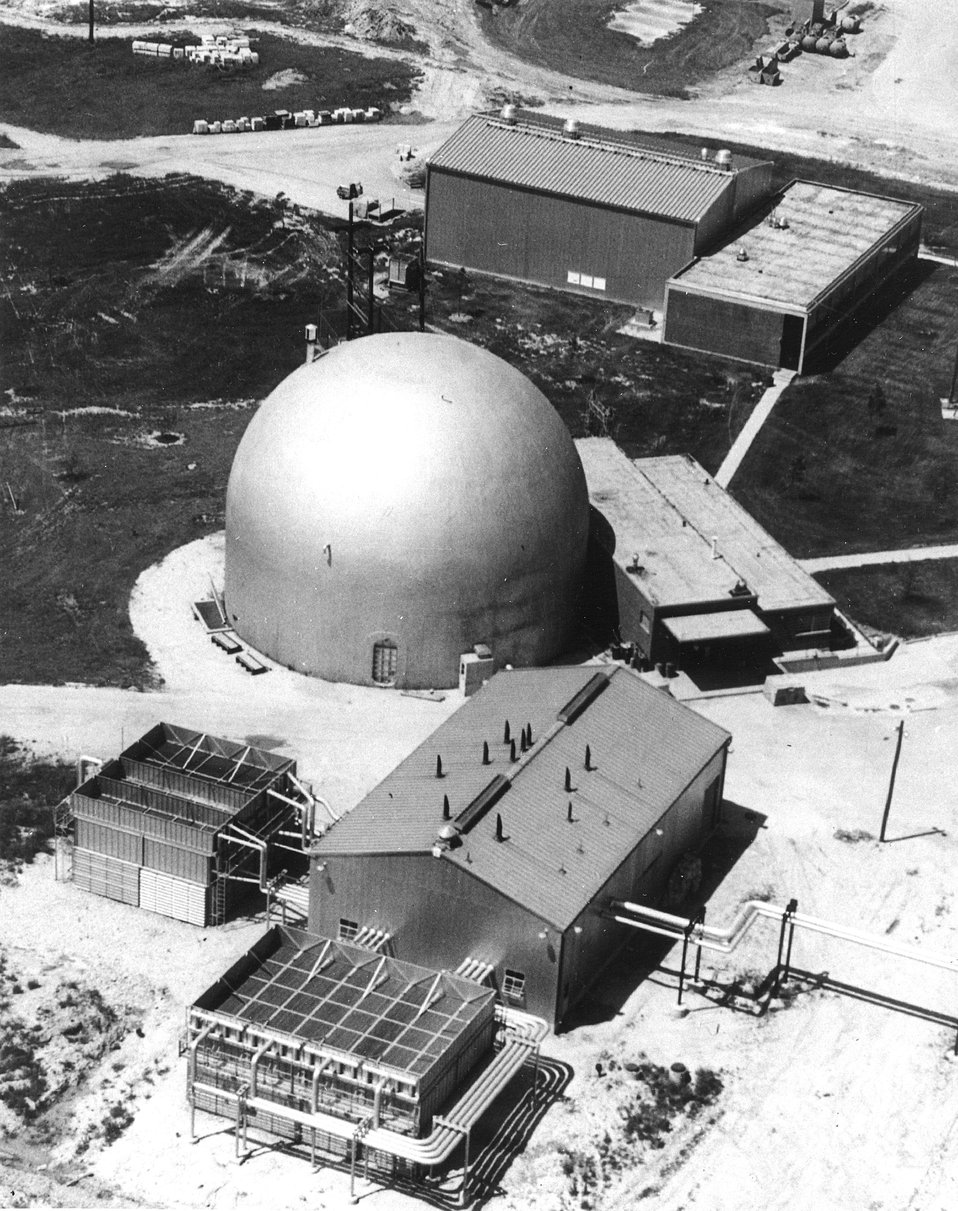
The experimental Boiling Water Reactor. c. 1964